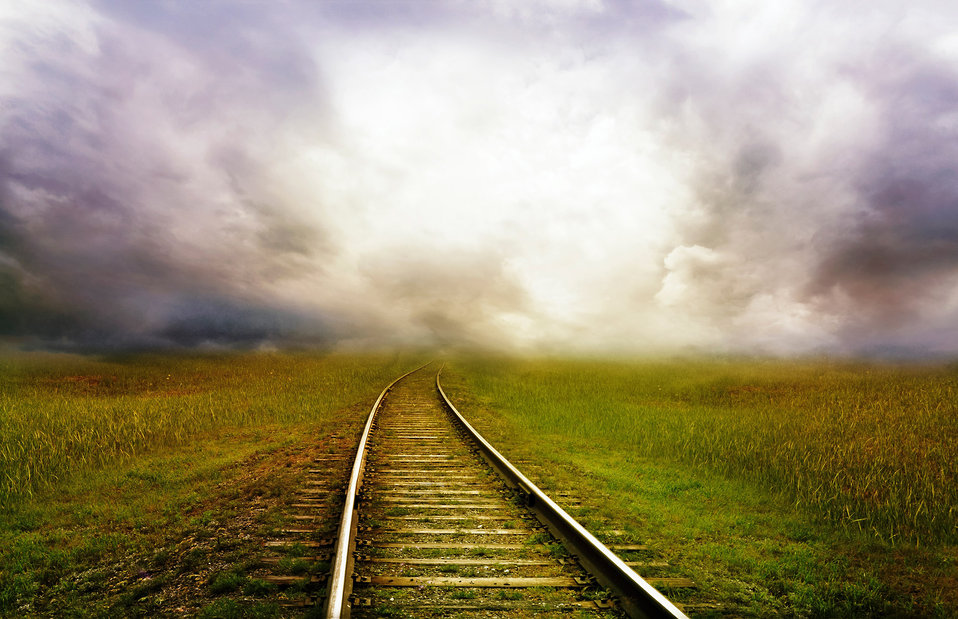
The railroad goes into the distance

A fantasy landscape with railroad tracks.